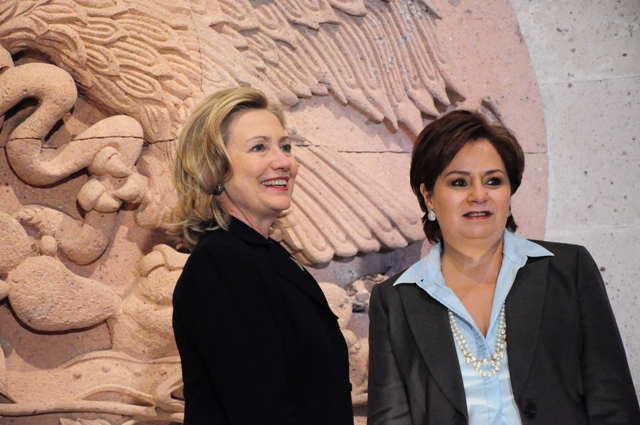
Secretary Clinton and Mexican Foreign Secretary Espinosa Stand Before the Perpetual Flame

U.S. Secretary of State Hillary Rodham Clinton and Mexican Foreign Secretary Patricia Espinosa stand before the perpetual flame for Mexican heroes at Alhondiga de Granaditas in Guanajuato, Mexico, on January 24, 2011.